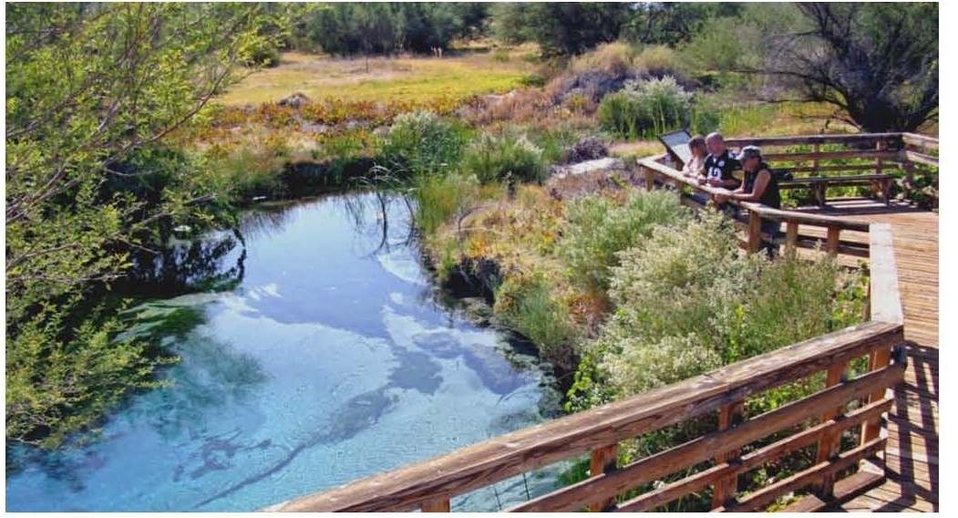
Ash Meadows NWR

Visitors admire endangered Ash Meadows Amargosa Pupfish in the clear waters of Crystal Pool in the Ash Meadows National Wildlife Refuge in Nevada. (USFWS)